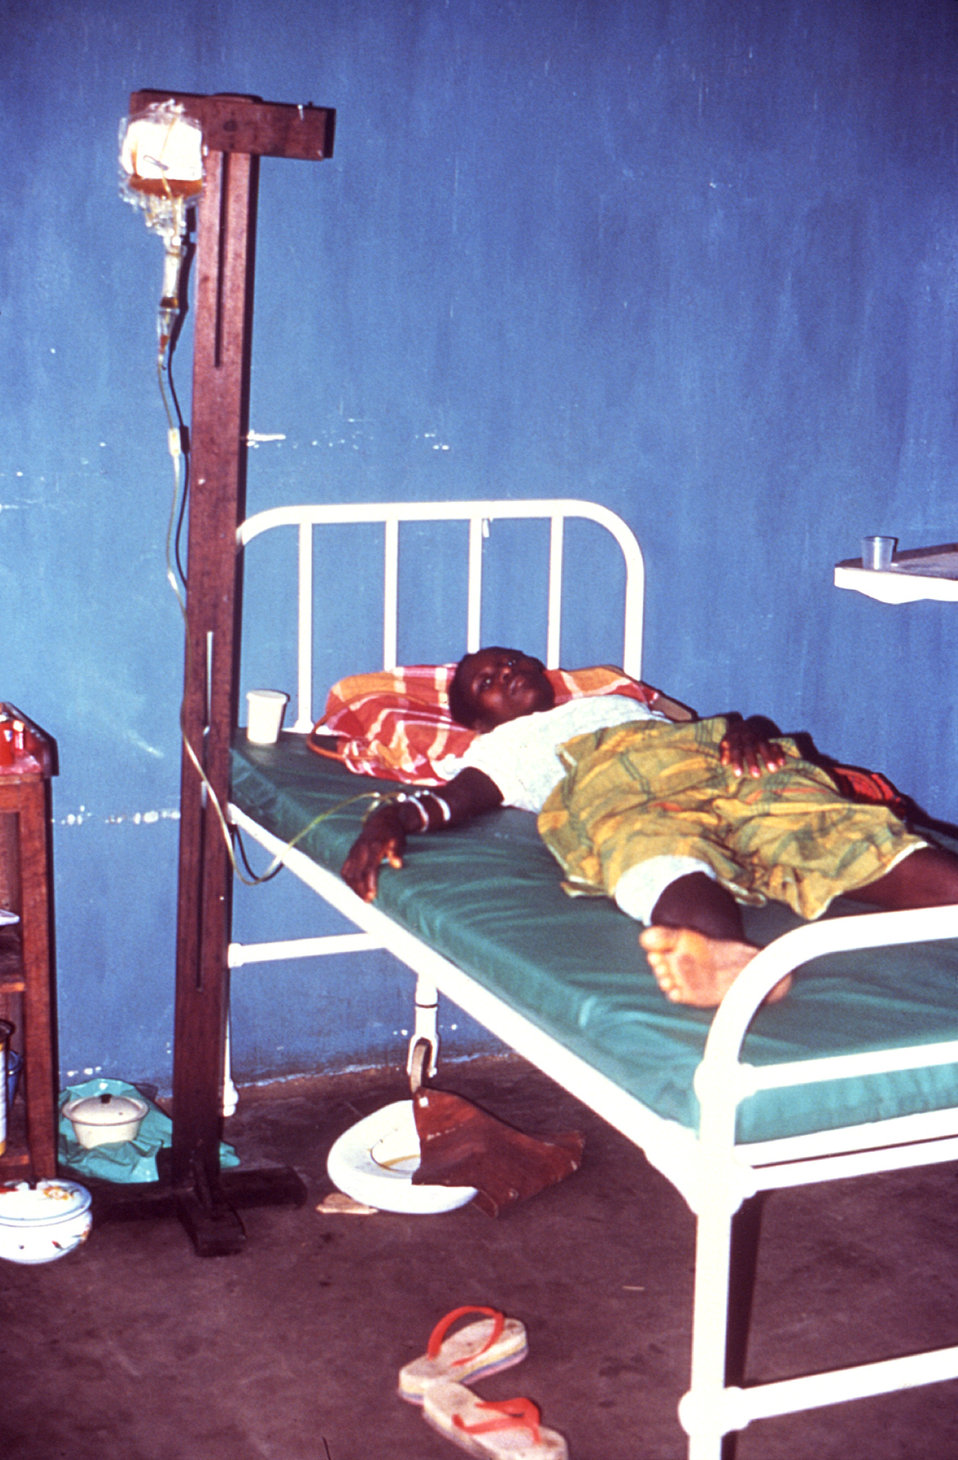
This 1977 image depicts a Lassa fever patient as she receives crucial plasma in order to replenish her depleted blood volume.